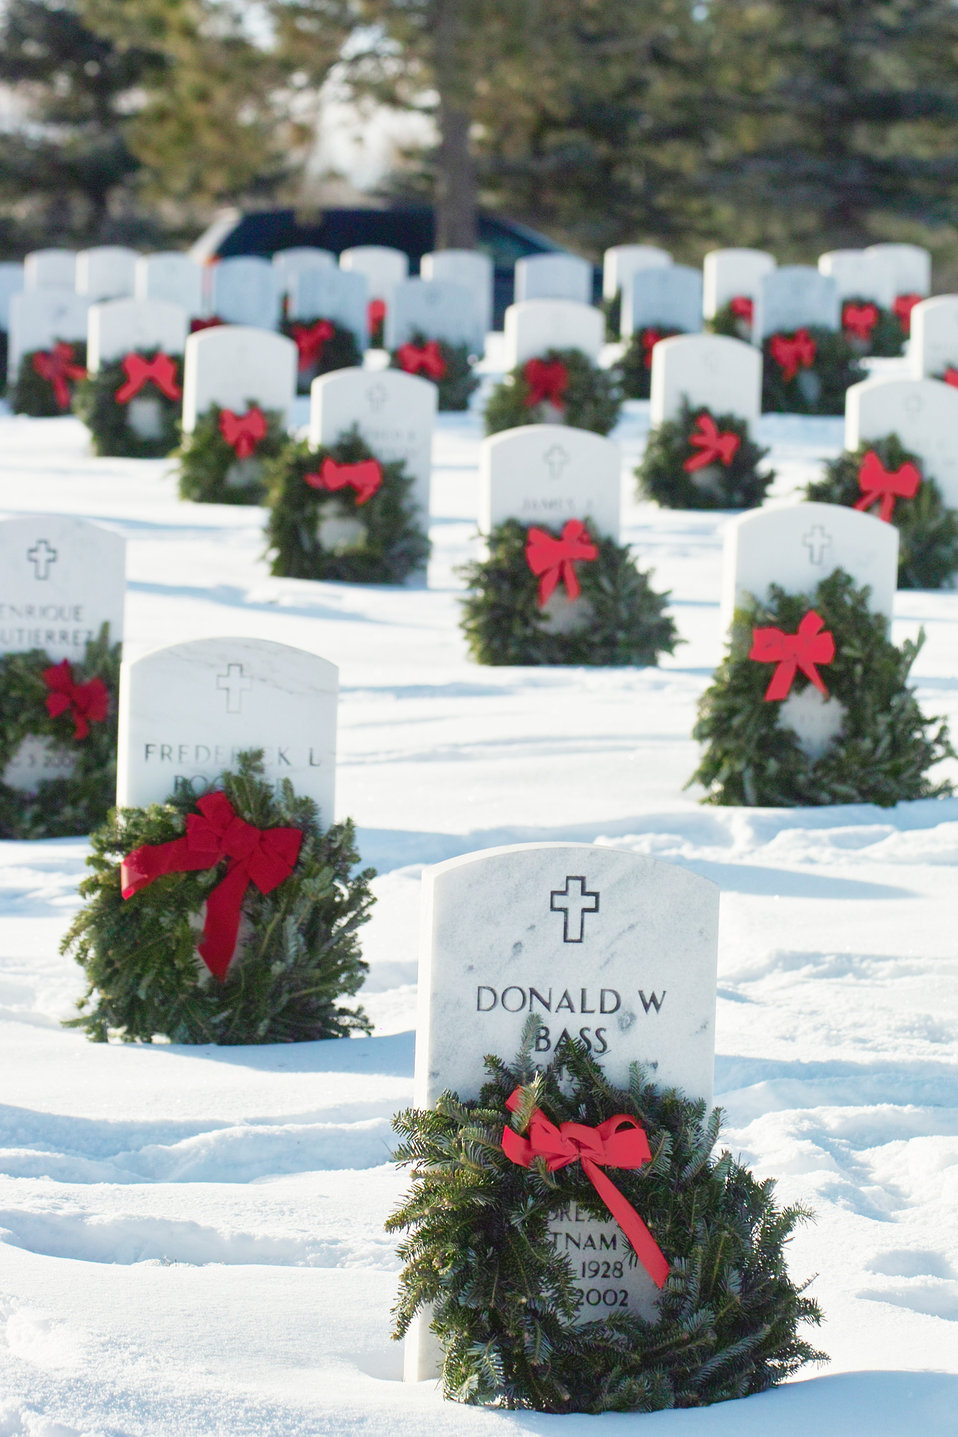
Honoring veterans

Wreaths adorn the graves of veterans during Wreaths Across America at Fort Logan National Cemetery in Littleton, Colo. Dec. 14, 2009. Eighty-seven volunteers from Buckley Air Force Base joined Civil Air Patrol members and volunteers from Schriever and Peterson air force bases and the Denver Metropolitan Area for a day of remembrance.